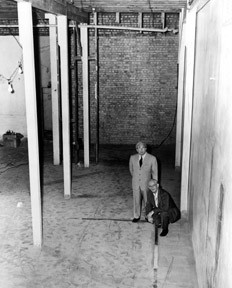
Leo Szilard (standing) and Norman Hilberry at site of CP-1 (first nuclear reactor) below West Stands, Stagg Field, The University of Chicago.